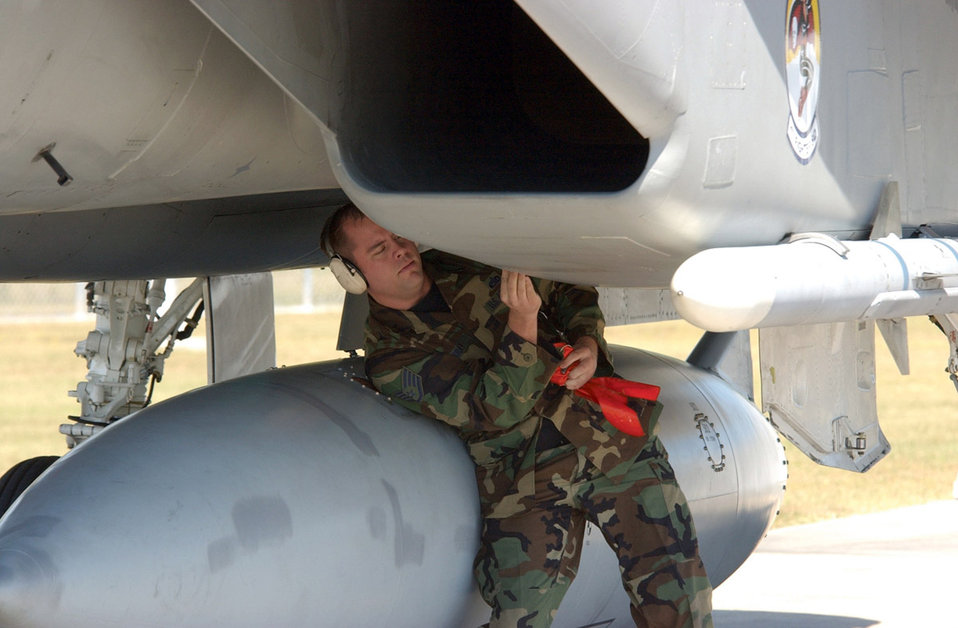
War Day

TYNDALL AIR FORCE BASE, Fla. -- Staff Sgt. Rich Murray pulls the safety pins from an F-15 Eagle during an alert scramble. Sergeant Murray is with the 1st Aircraft Maintenance Squadron here.